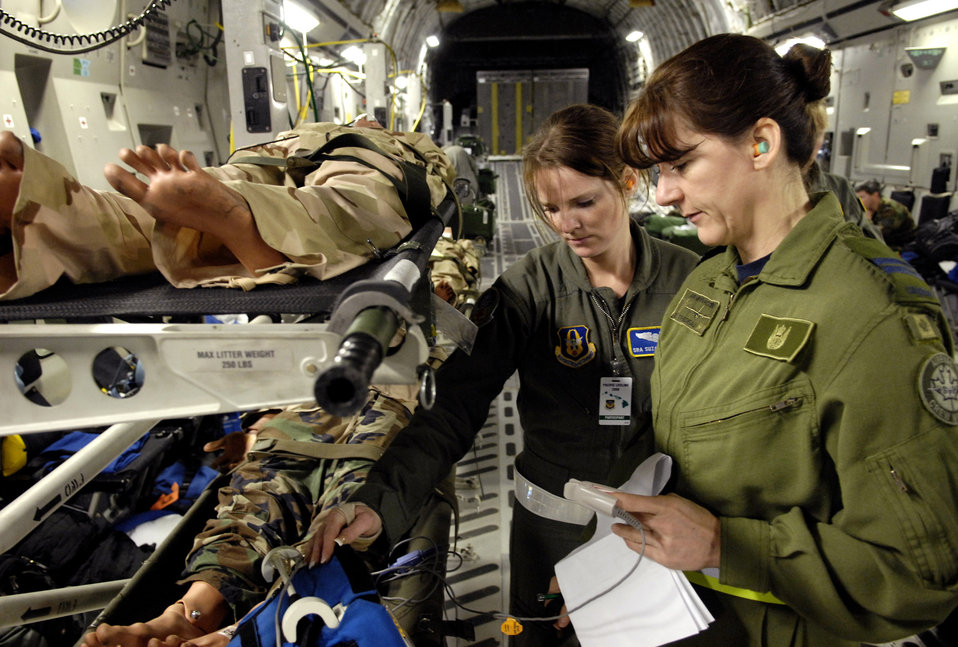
Providing a lifeline

Senior Airman Suzanne Redd (left) Canadian Capt. Brenda Thibedeau monitor a patient onboard a C-17 Globemaster III during Exercise Pacific Lifeline Feb. 5 at Hickam Air Force Base, Hawaii. Captain Thibedeau is a flight nurse from the 24th Canadian Forces Health Services. Airman Redd is medical technician from the 446th Aeromedical Evacuation Squadron from McChord Air Force Base, Wash. Pacific Lifeline is a total force exercise staging from three locations within the Hawaiian Islands. It provides approximately 900 Department of Defense members a test environment to rapidly deploy and provide time-critical services in the wake of a simulated natural disaster.